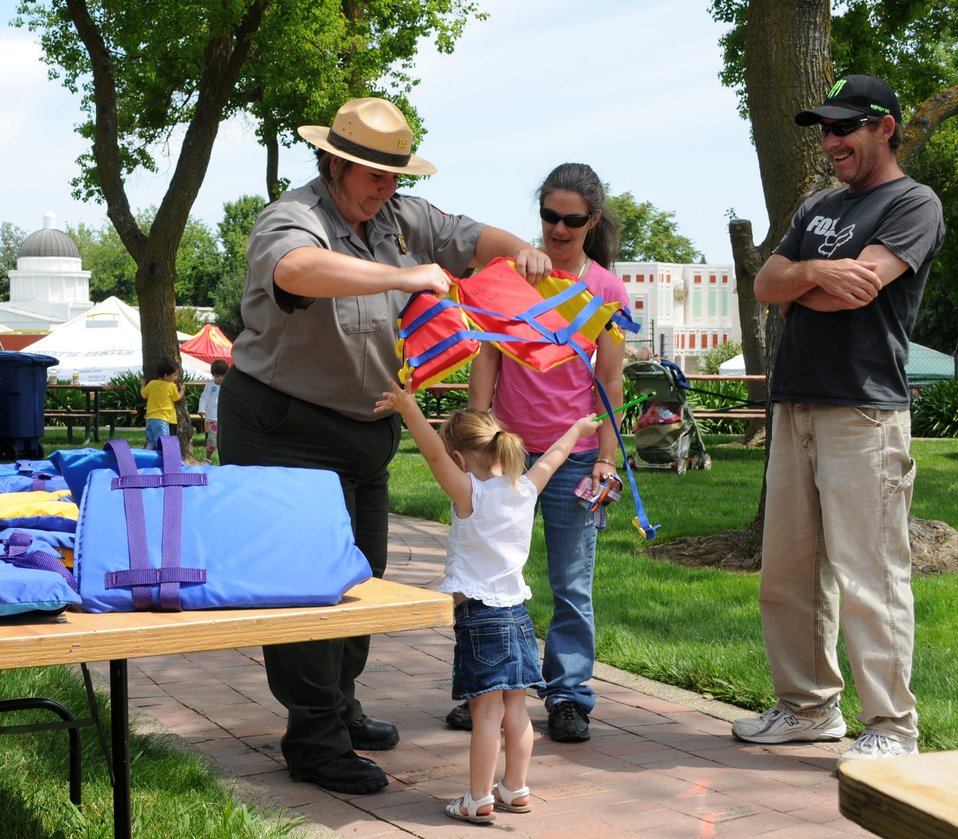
Corps park rangers help teach water safety

New Hogan Lake park ranger Alicia Unsinn helps Natalie Kelly try on a kids’ life jacket at the 13th annual Family Health and Safety Day in Sacramento, Calif., June 11, 2011. “We are so glad to learn more about water safety, since the American River is right in our backyard,” said Julie Kelly, Natalie’s mother (second from right). “Right now, the water is really high, and very cold. In fact the trail is almost covered in water,” said Kelly, “and we have to be extra careful.”